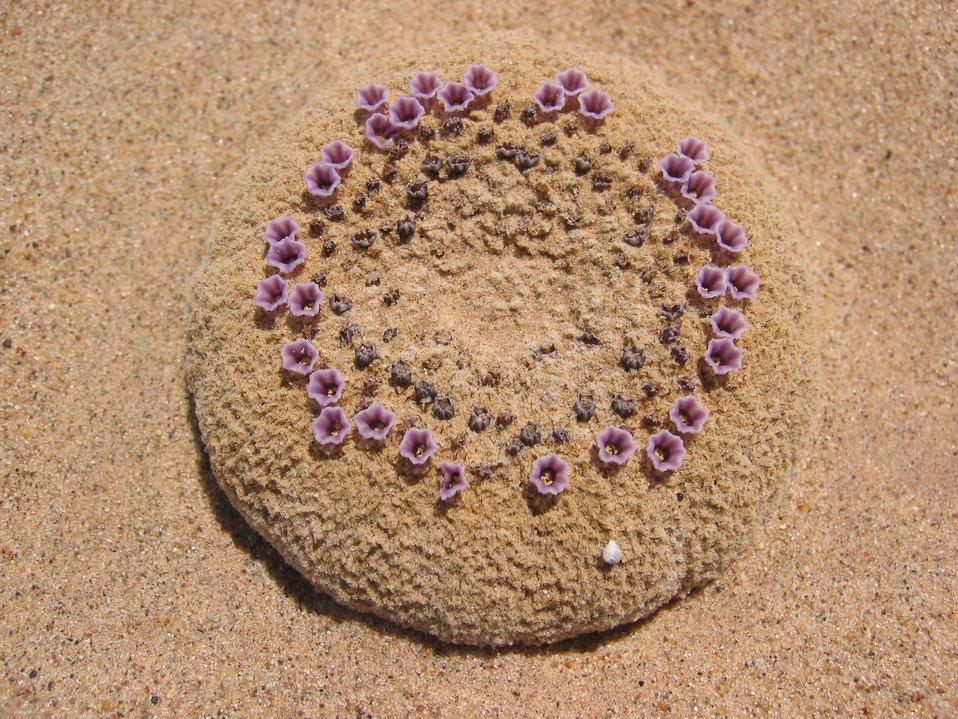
Sand food

Pholisma sonorae (sand food) is a rare plant found in the deserts of southeastern California, Arizona, and El Gran Diesierto in Sonora, Mexico.

This parasitic plant has a long stem that reaches about 6 feet below the surface where it attaches to the root of a nearby host plant such as desert buckwheat.